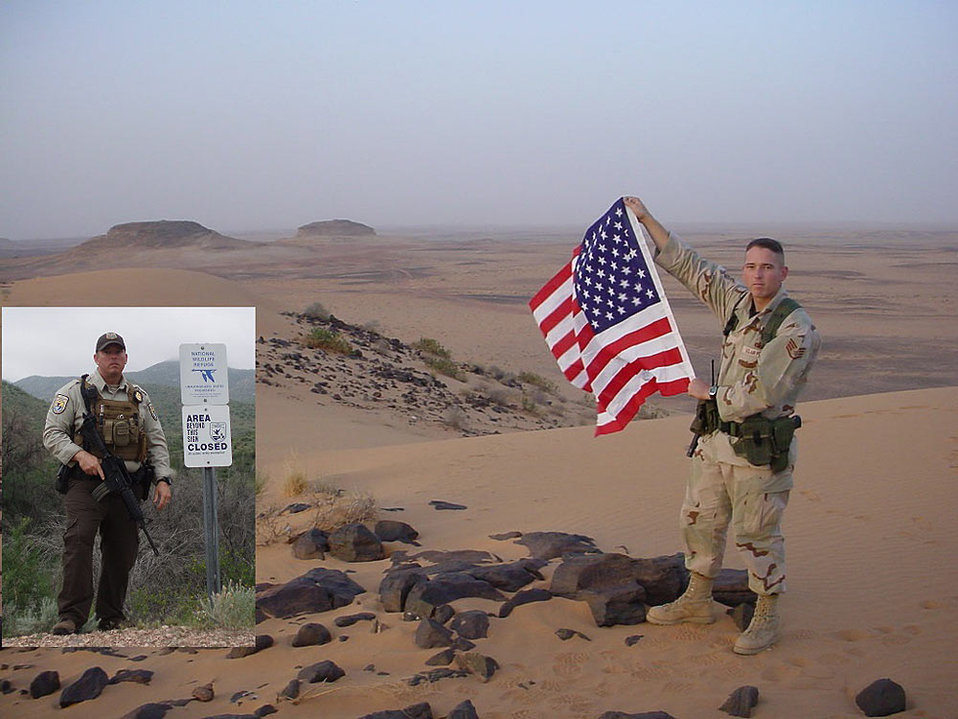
Jason Greff-Southwest Region

Jason Greff, Federal Wildlife Officer at San Bernardino / Leslie Canyon National Wildlife Refuges in Arizona, did several tours in the Middle East and his patrol partner took this photo on the one-year anniversary of 9/11. He spent 11 years active duty U.S. Air Force Security Police (1996-2007) and left proud to have served.